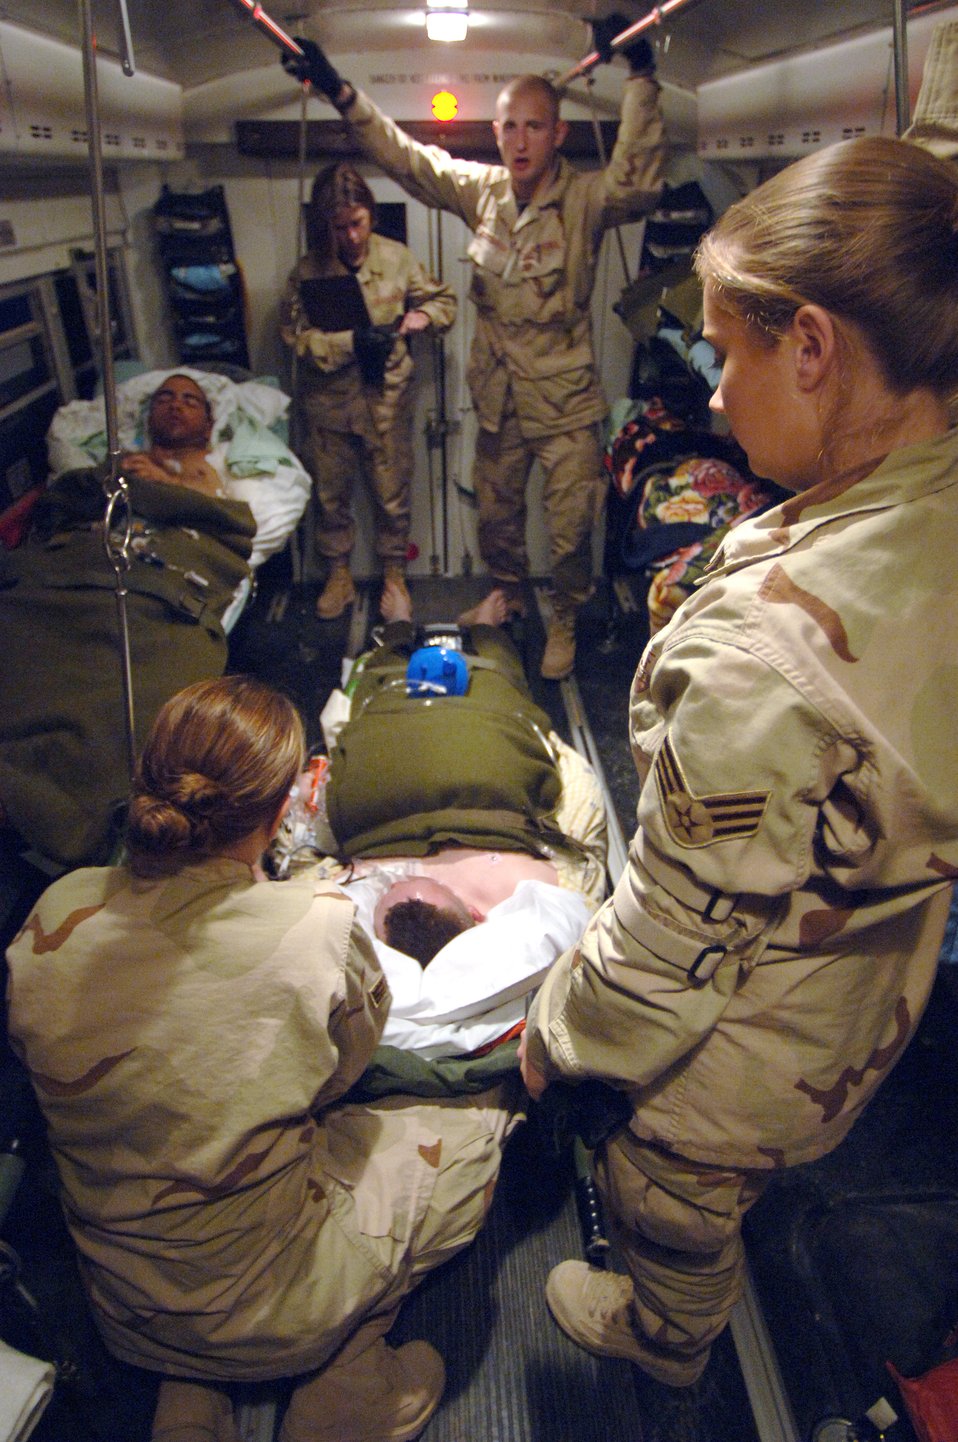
Staging facility prepares injured warfighters for flight

Senior Airman Deana Stefko, Senior Airman Tara Gensler, Senior Airman Travis Mortenson, and Staff Sgt. Katie Hagemeier care for injured patients on the medical transport bus while in route to a C-17 Globemaster III departing Feb. 21 from Balad Air Base, Iraq, to Landstuhl, Germany, where they will receive further care for their wounds. The Airmen are assigned to the 332nd Medical Group Contingency Aeromedical Staging Facility.